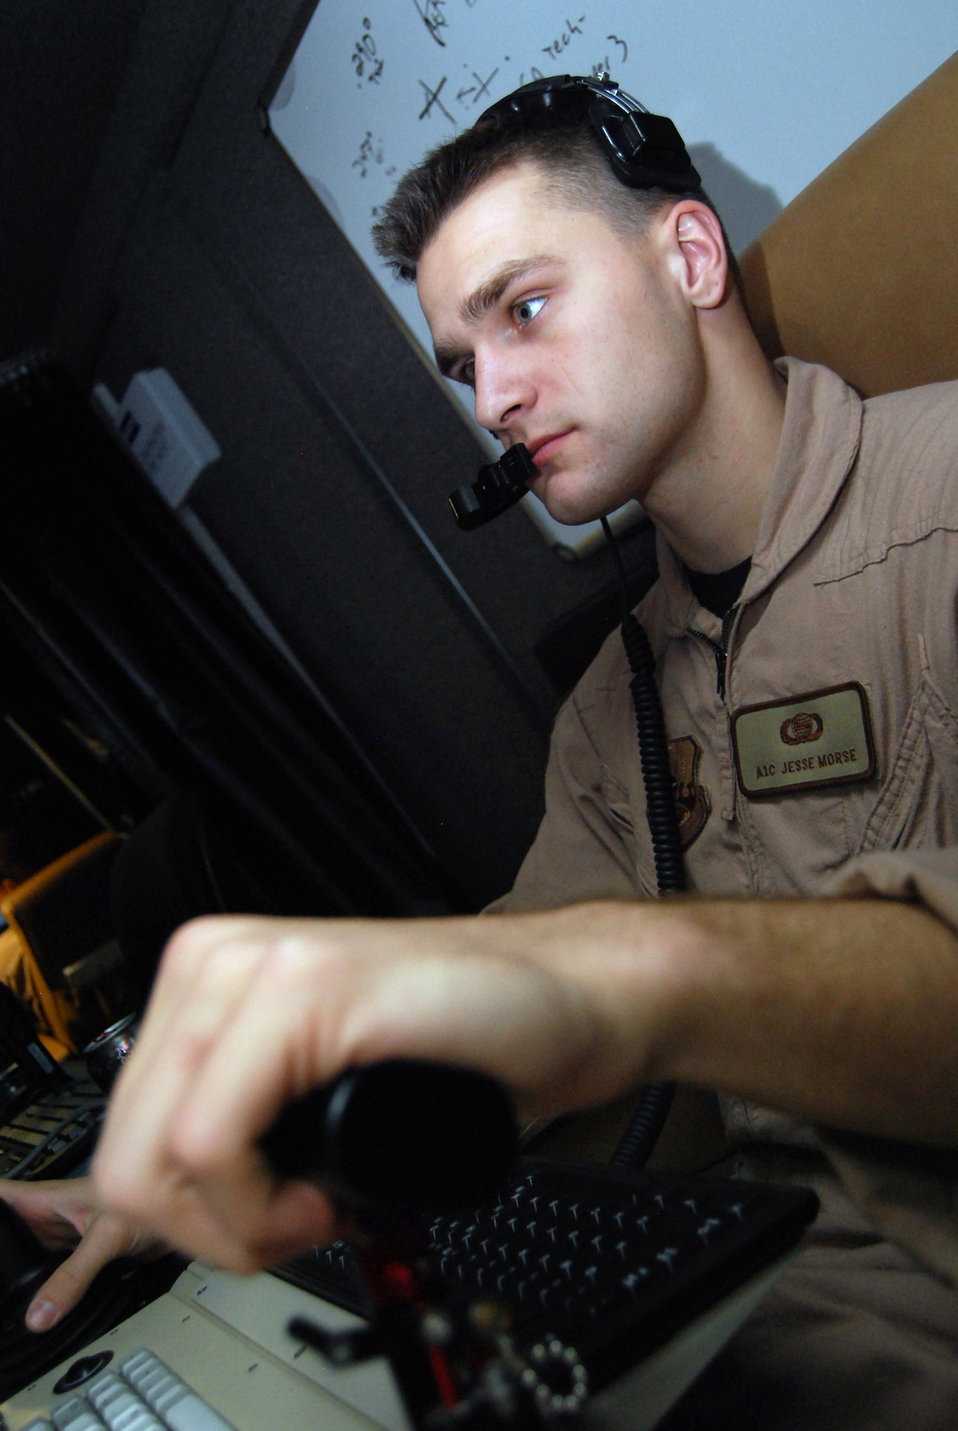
$1 headset fix improves Predator mission

Airman 1st Class Jesse Morse operates the onboard sensor of an MQ-1 Predator unmanned aerial vehicle before take off Aug. 1. Airmen at Creech Air Force Base, Nev., control Predators during much of their missions, but pilots and sensor operators here operate the aircraft during takeoff and landing. Airman Morse, a Predator sensor operator with the 46th Expeditionary Reconnaissance and Attack Squadron here, is deployed from Creech AFB.